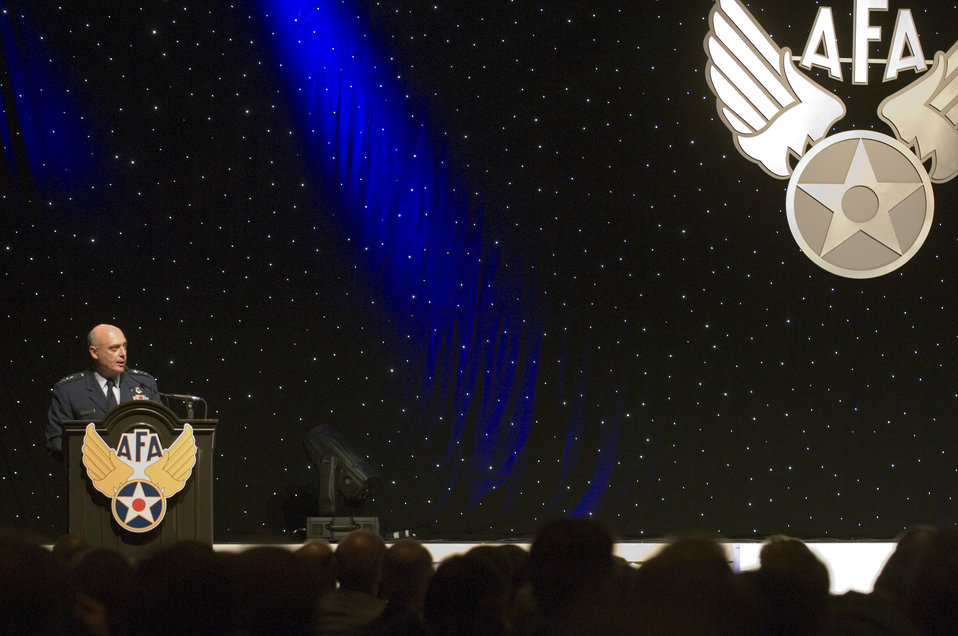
Air Force officials recognize 12 Outstanding Airmen of Year

Vice Chief of Staff Gen. Carrol H.